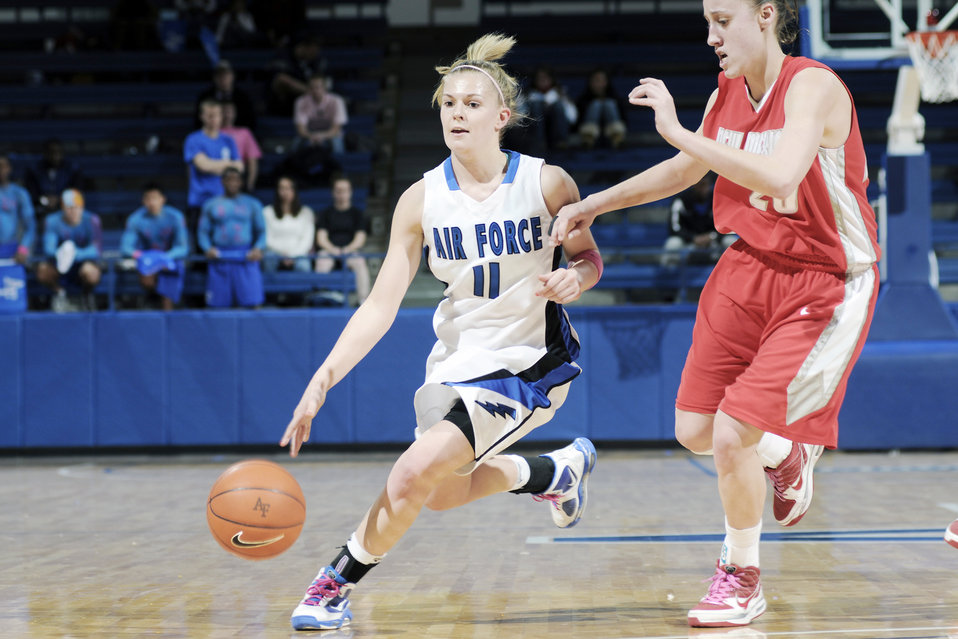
Photo essay: Academy women?s basketball falls to New Mexico

U.S. Air Force Academy sophomore guard Anna Gault dribbles up court past the University of New Mexico?s Sara Halasz Feb. 20, 2010, at Clune Arena in Colorado Springs, Colo. The Falcons lost 65-46.